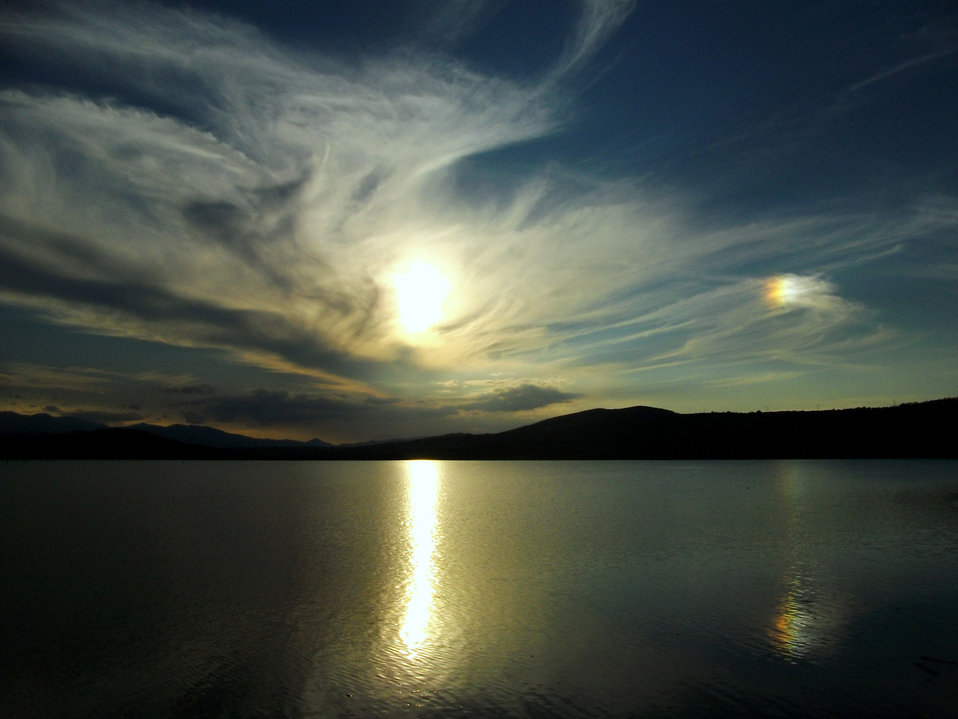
Sun dog

Sunset over the ogosta dam in bulgaria.